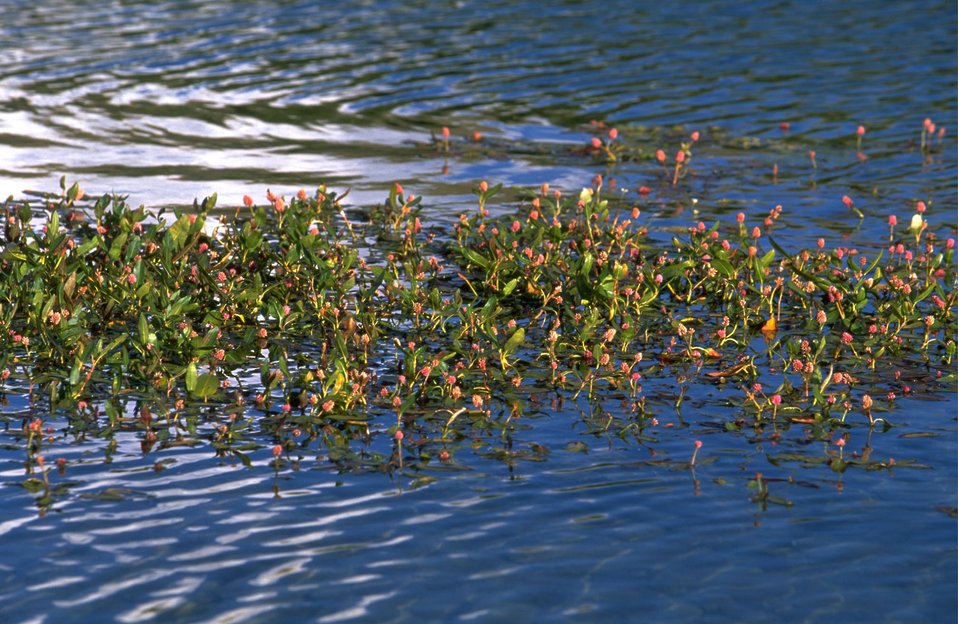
Blooming Lillies on Axolotl Lake